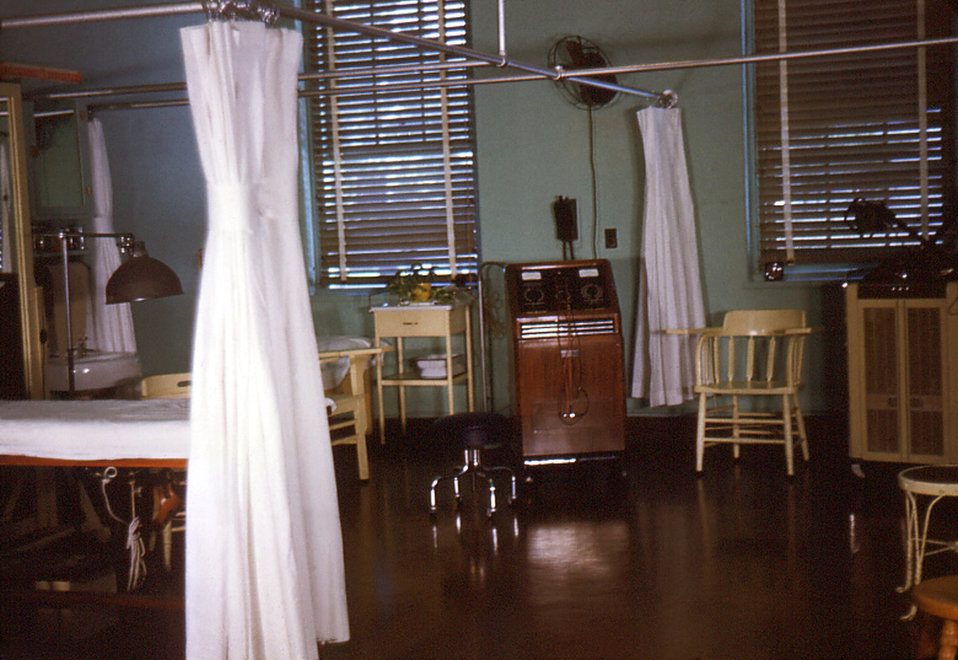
Depicted in this historic image was the interior of the Physical Therapy Room in the Carville, Louisiana Leprosarium. A staff nurse was placed in charge of all treatments involving the electrical appliances found in this clinical setting, that were therapeutically prescribed for crippling conditions involving the hands and feet, (see PHIL #8853). The hospital was a self-contained compound with its own power plant, storehouse, patient treatment centers such as this Physical Therapy center, and a dental office, food-processing facilities, i.e., a cafeteria, and its own cemetery.